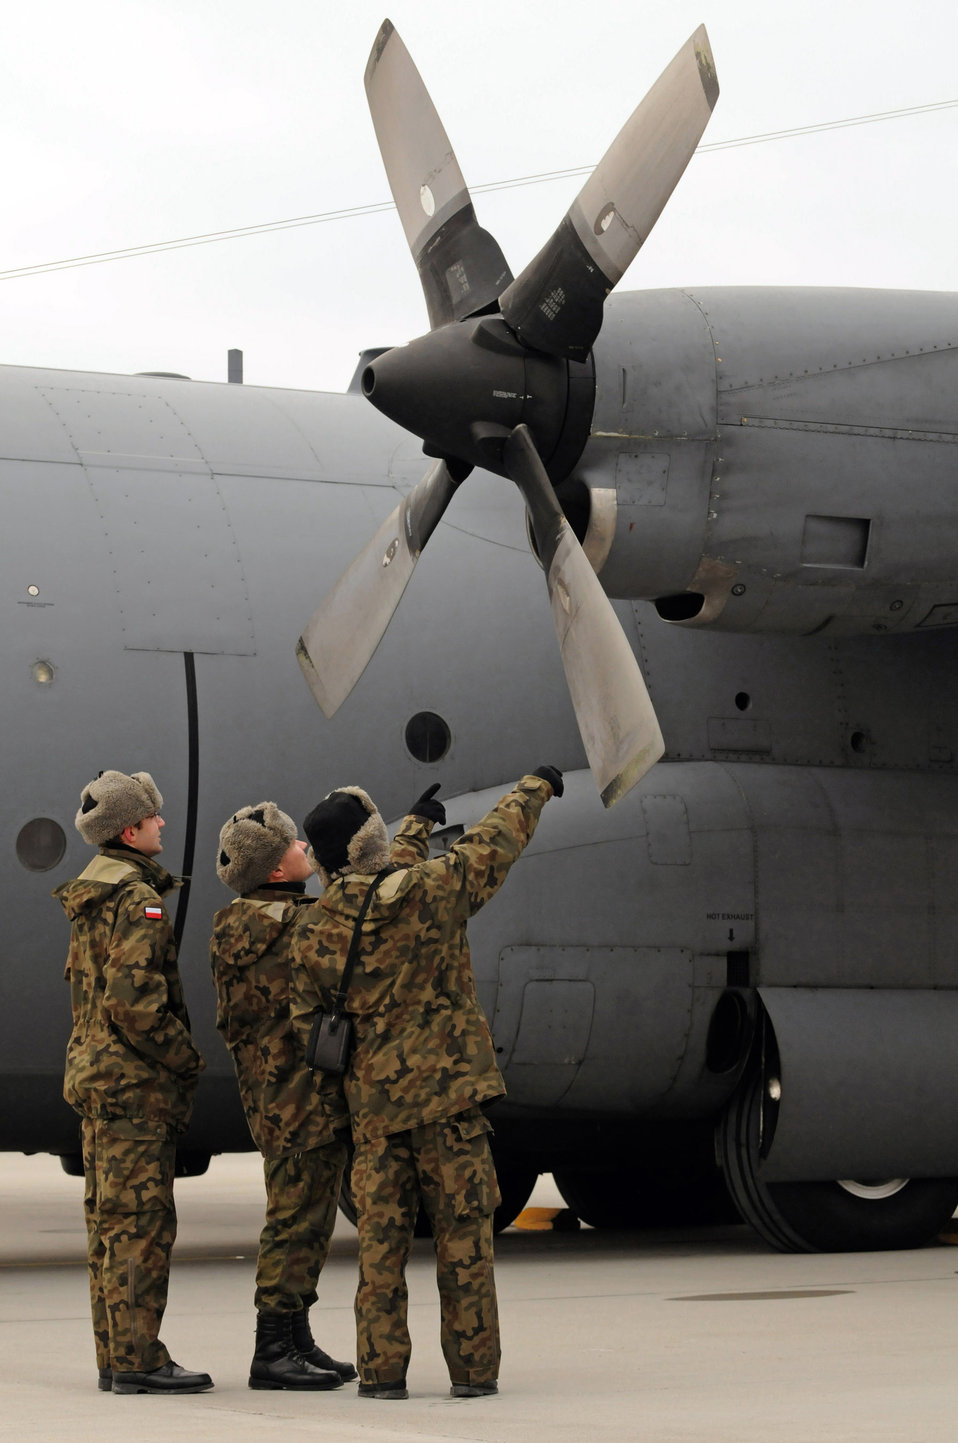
Ramstein Airmen show C-130 capabilities to Polish military

Polish air force members look at a C-130 Hercules during a U.S. Air Force visit Jan. 29 at Powidz Air Base, Poland. The visit gave Polish air force members a chance to familiarize themselves with the aircraft as they await delivery of their own C-130Es in the next few months.